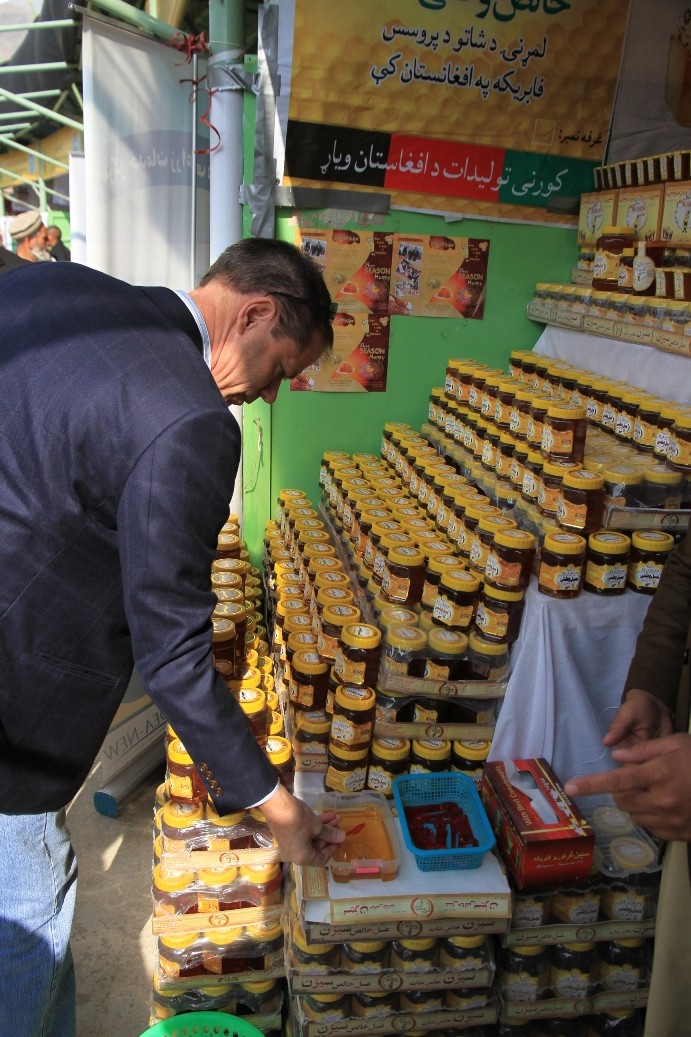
Ag.Fair, October 2013

Larry Sampler tastes a product of Season Honey, an IDEA-NEW assisted business at Kabul International Ag.Fair, October, 2013